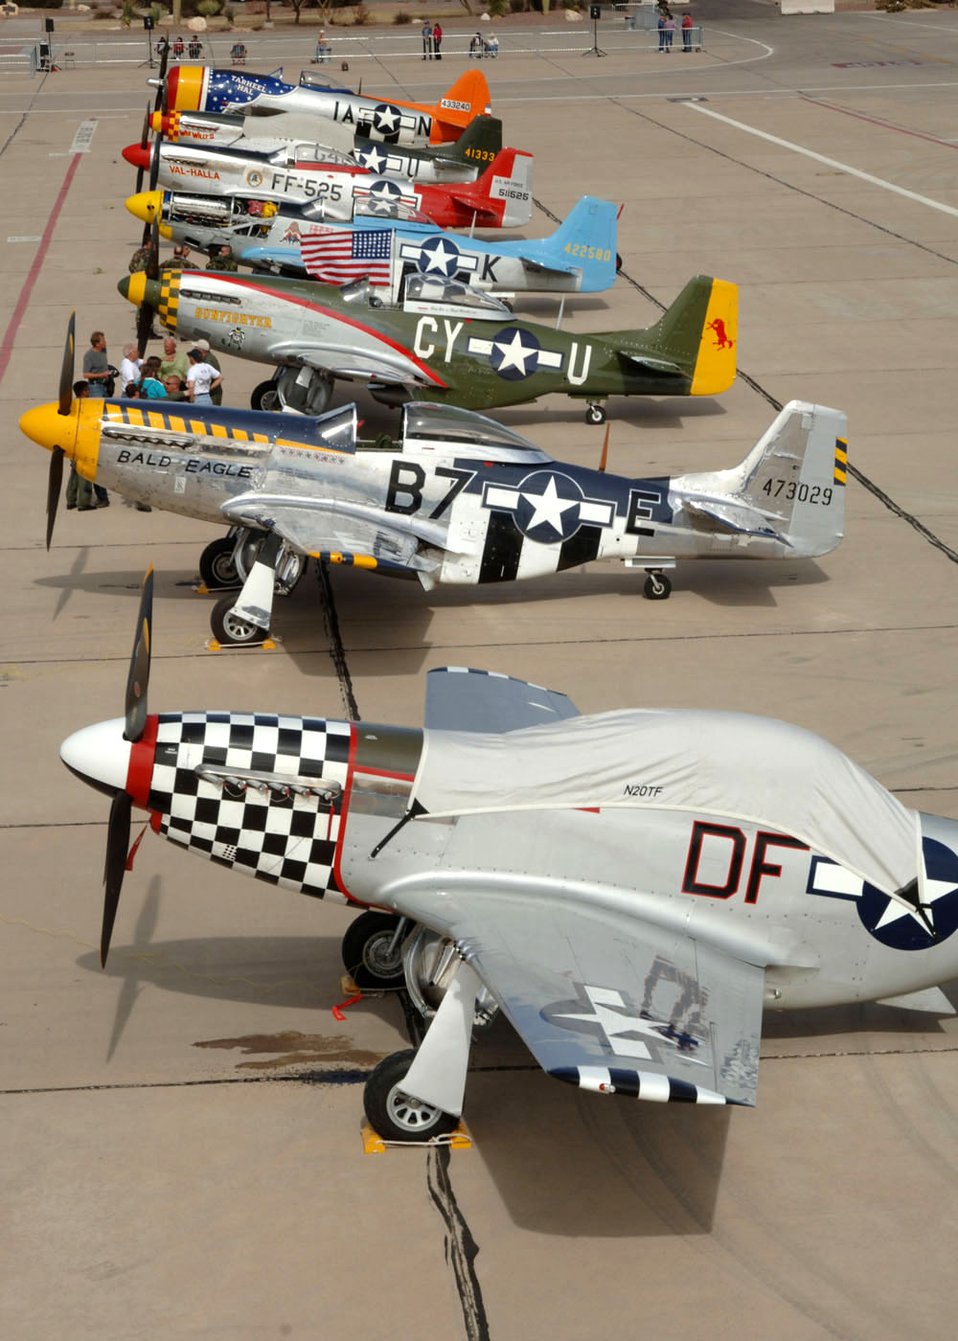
Heritage Conference mixes old with new

Pilots, crewmembers and spectators gather around several P-51 Mustangs and a P-47 Thunderbolt (rear) March 4 after a busy few days at the 2007 Heritage Conference at Davis-Monthan Air Force Base, Ariz. The conference provided an opportunity for Air Combat Command demonstration pilots to train together with modern and historic military aircraft in preparation for the upcoming air-show season.